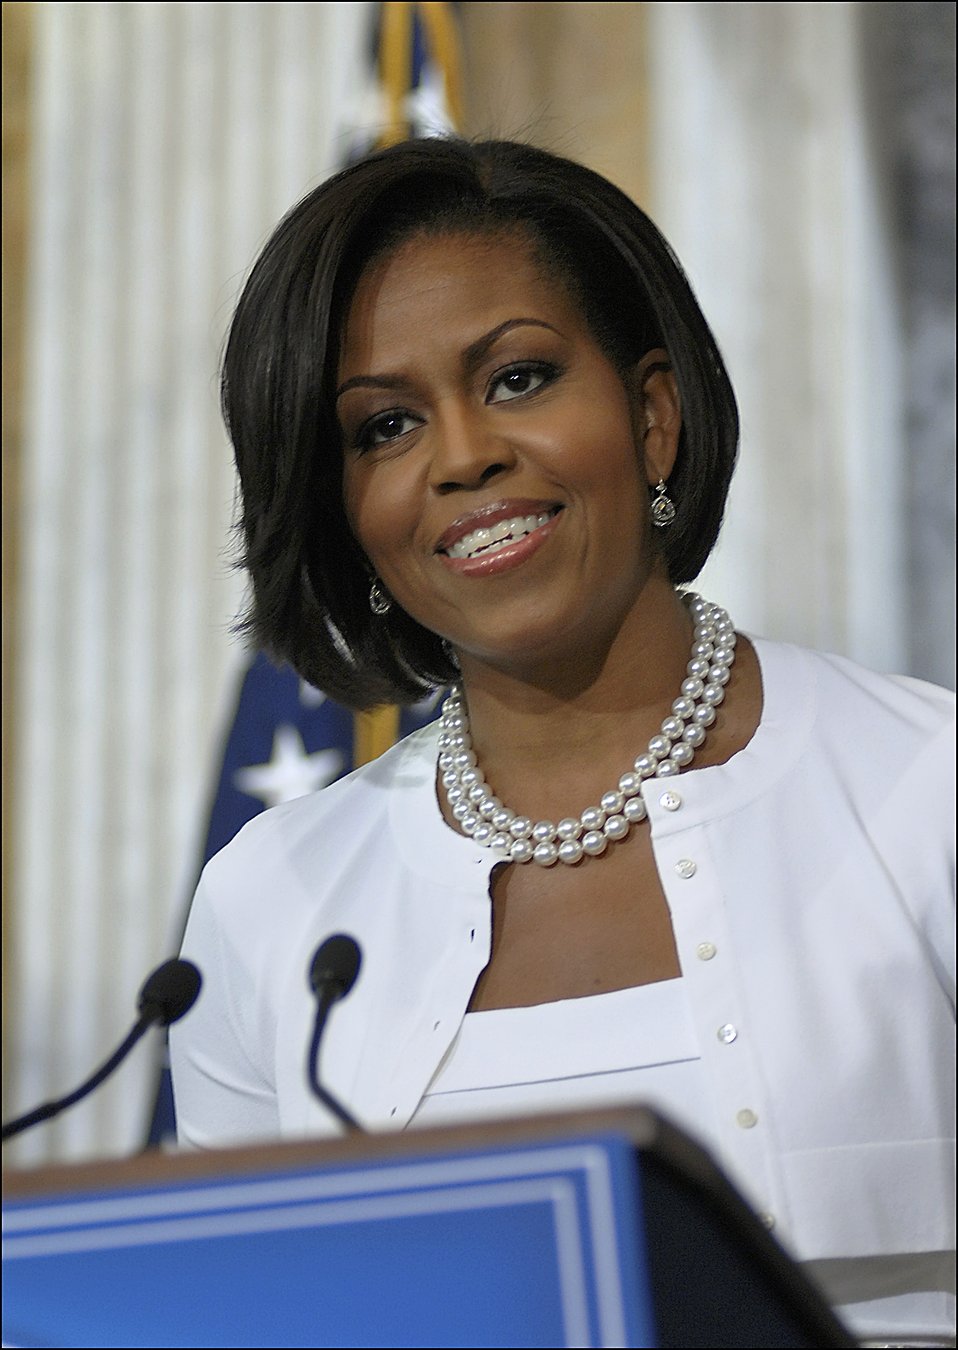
Michelle Obama visits the Treasury Department, 7/7/10

First Lady Michelle Obama thanked Treasury employees for their hard work and dedication. “You should be proud,” she told the audience. “The work you do here at Treasury is about more than the stories that show up in the headlines and on the news. You all do so much more.”